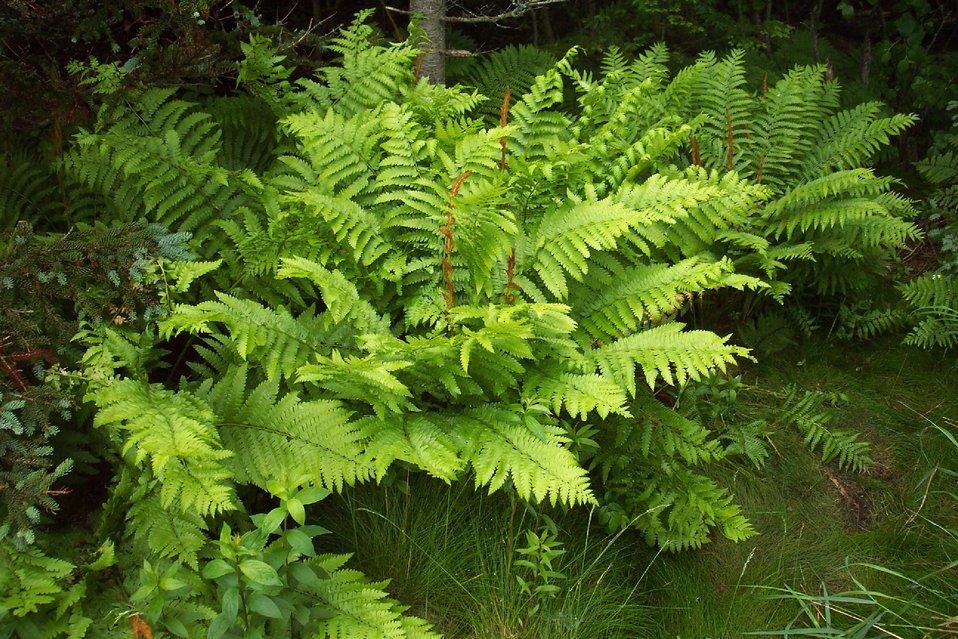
Ferns at Edgar Tennis Preserve.